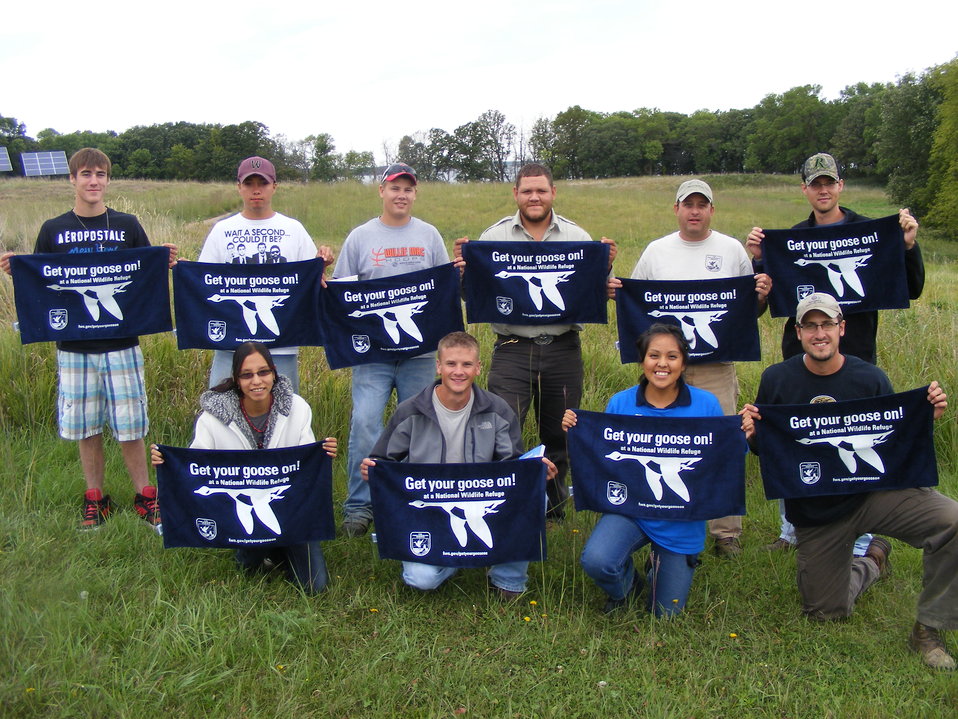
Get Your Goose On!

Photo taken at Waubay National Wildlife Refuge in South Dakota.